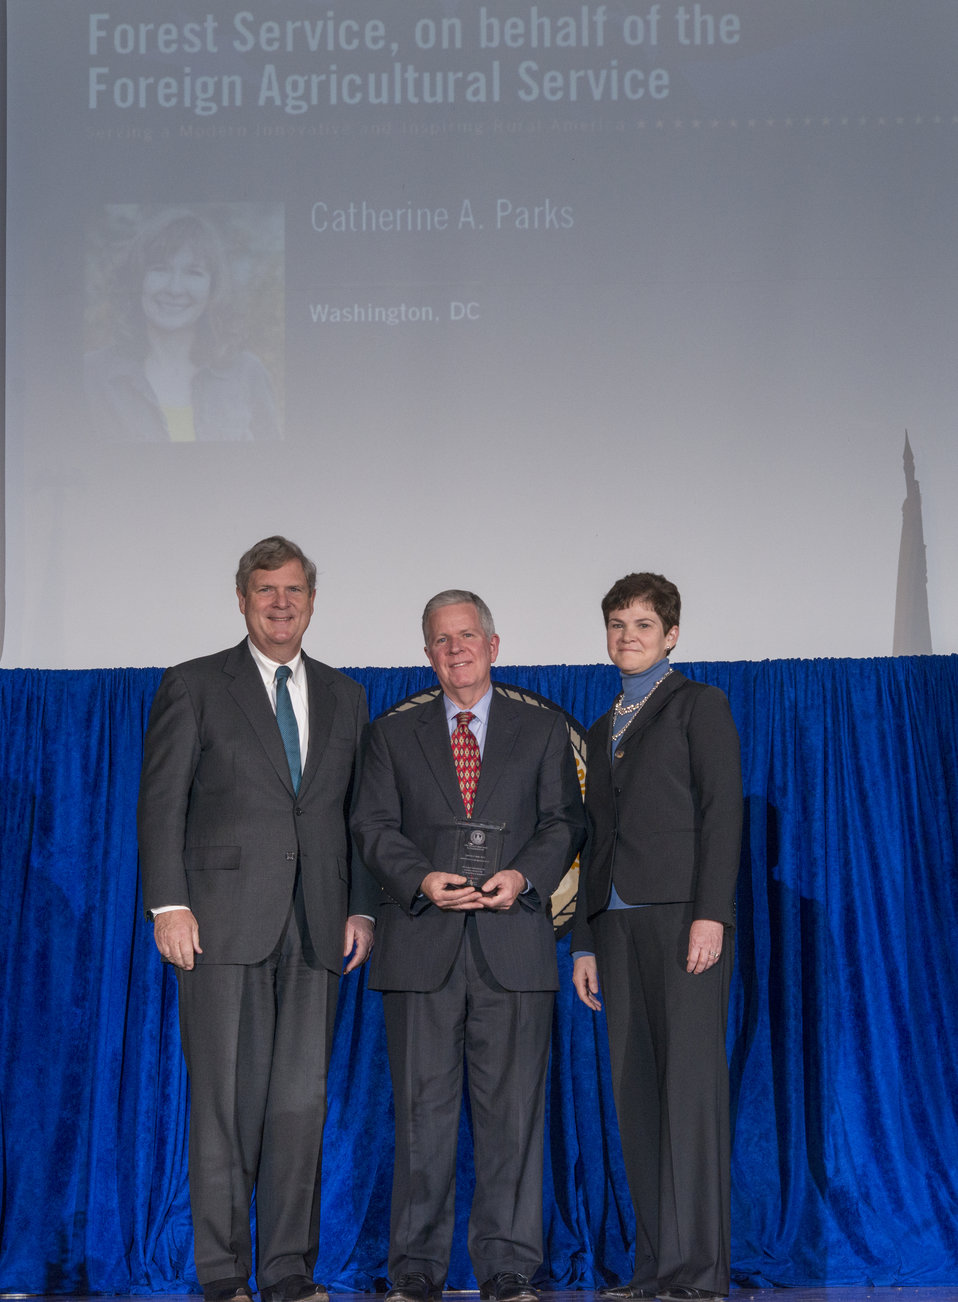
Agriculture Secretary Tom Vilsack and Agriculture Deputy Secretary Krysta Harden present the Secretary’s Honor Award to Forest Service employee Catherine A. Parks, Ph.D. (accepting Robert McCory) for outstanding contribution toward the evacuation and recovery of wounded personnel in Afhanistan, helping to create the Afghan Agricultural Took Kit, and exemplary management of agricultural operations in Afghanistan at the 2013 Secretary's Honor Awards in the Jefferson Auditorium at the U.S. Department of Agriculture (USDA) in Washington, D.C. on Wednesday, Dec. 11, 2013.